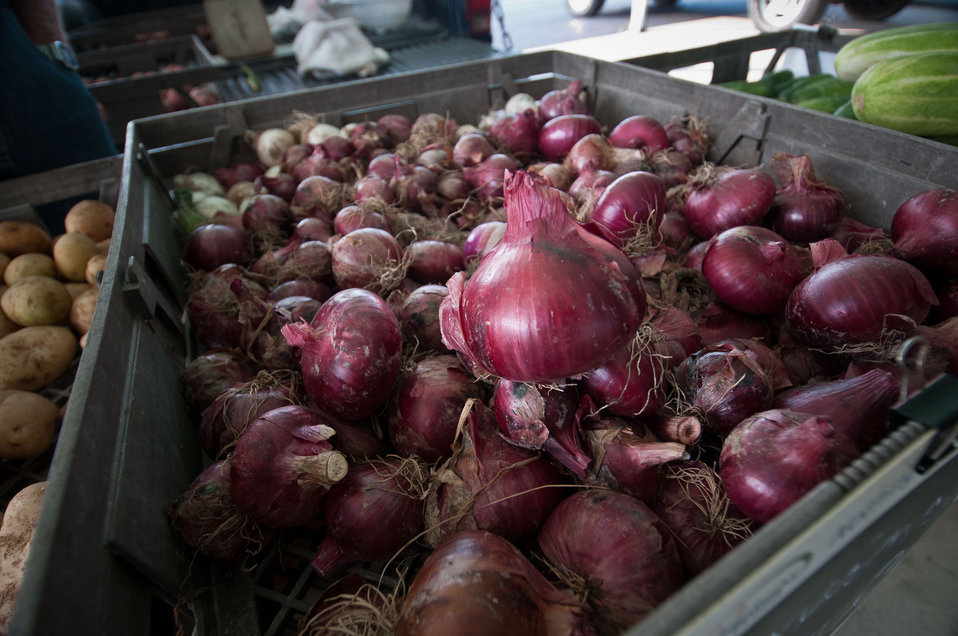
Red onions for sale at the Bath County Agricultural Education and Marketing Center, Owingsville, KY, on Friday, July 15, 2011. The Center was the recipient of a $400,000 Rural Business Enterprise Grant. It has given farmers and producers from Bath and surrounding counties the opportunity to manufacture and market their locally grown and locally produced value-added and “Kentucky Proud” branded products, including but not limited to, fresh produce, artisan crafts and specialty food products. The Center is open year-round and allow residents to sell products in four different retail categories, including Kentucky products, regional crafts, “green” groceries and bakery/deli. Several producers expressed their gratitude for Rural Development’s assistance in making the center a reality. The project was made possible through funding the American Recovery and Reinvestment Act of 2009 enacted by the 111th United States Congress in February 2009 and signed into law on February 17, 2009, by President Barack Obama.